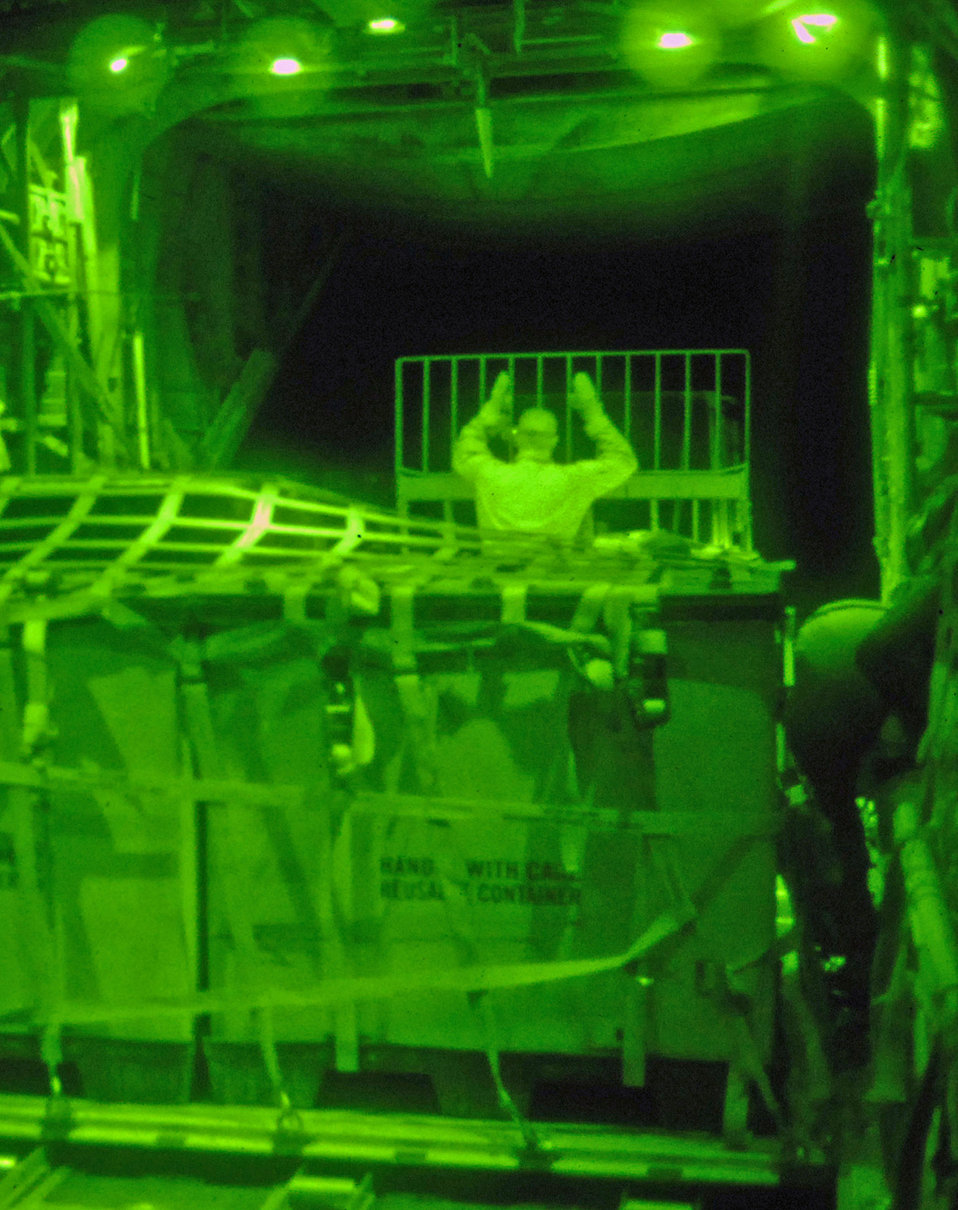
Herculean support for convoys

Staff Sgt. Ronnie James ushers a pallet of cargo into a C-130 Hercules during a combat mission May 7 at Balad Air Base, Iraq. Members of the 777th Expeditionary Airlift Squadron help prevented convoy vehicles and servicemembers from traveling along improvised explosive device-laden Iraqi roads by airlifting troops and supplies throughout the area of operations. Sergeant James is a 777th EAS loadmaster deployed from Little Rock Air Force Base, Ark.